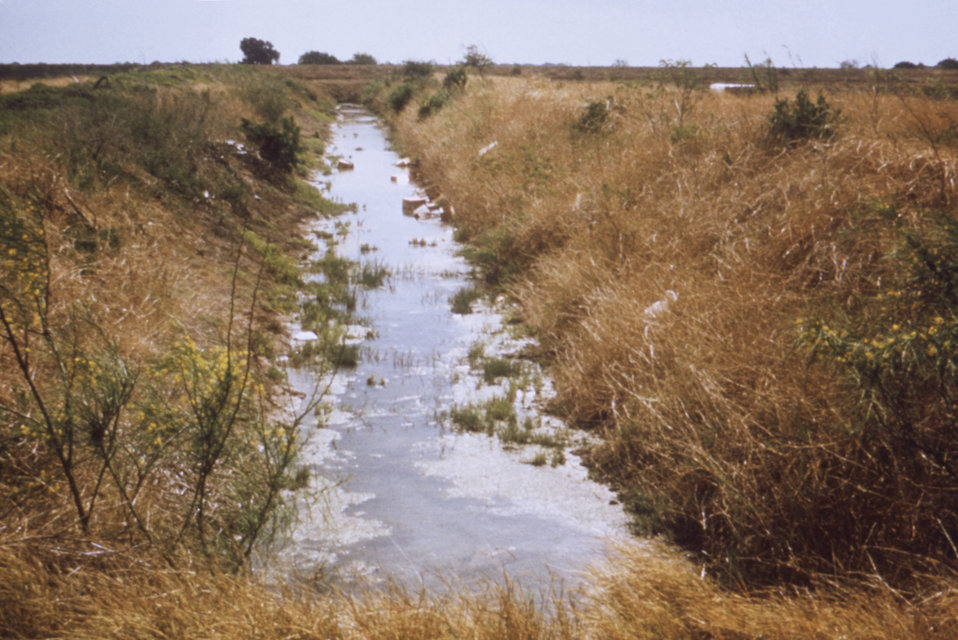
The water flow through this Texas irrigation drainage ditch had been compromised by a build-up of trash dumping and vegetation.